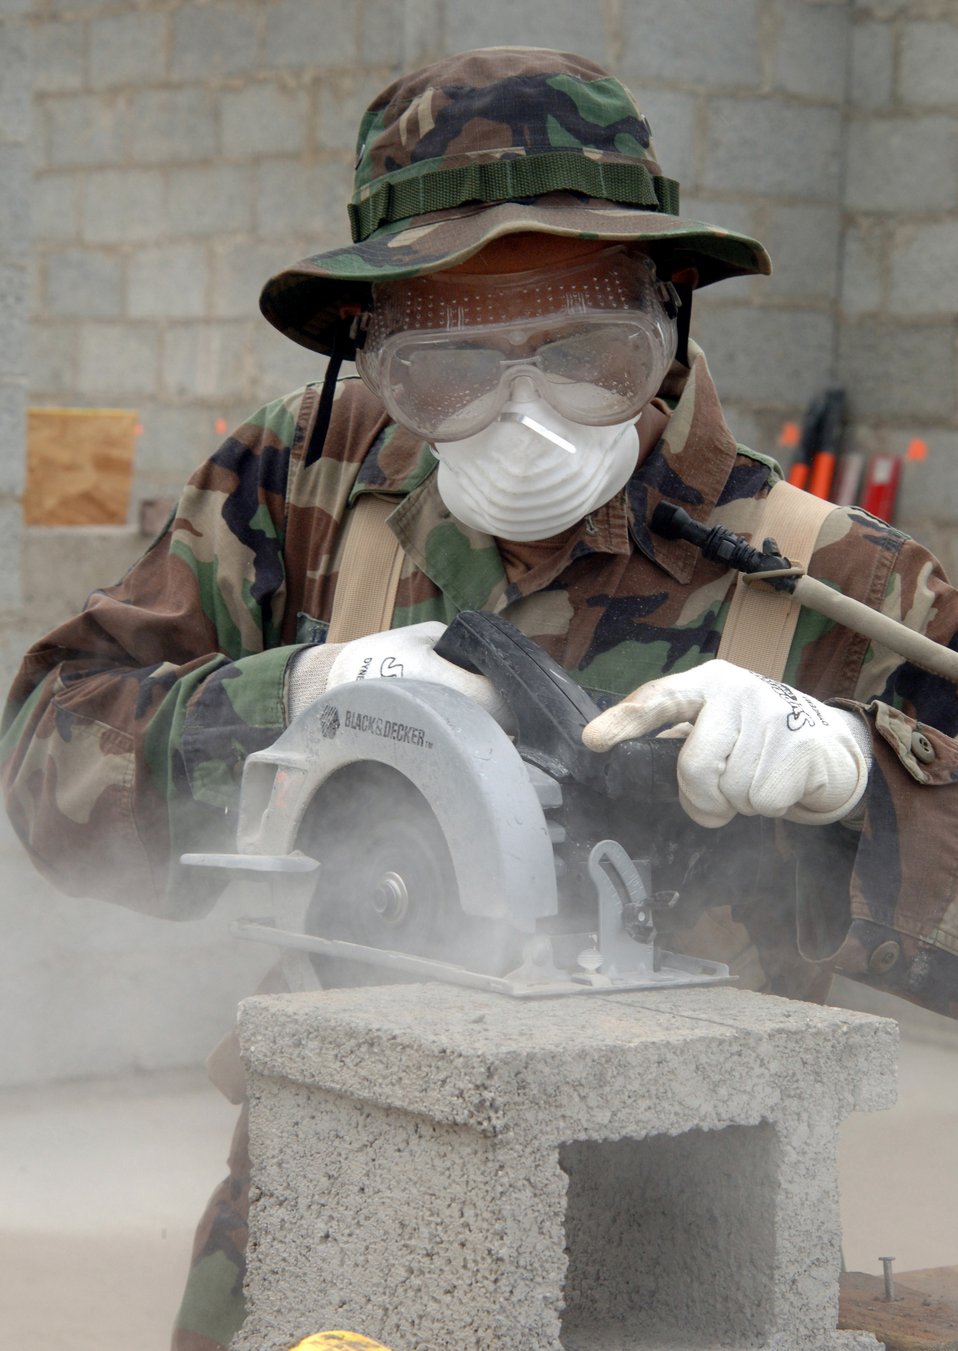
Reserve engineers in Saint Lucia

Senior Airman Trevon Walton cuts a cinder block to size for a project on Saint Lucia's southern coast on Saturday, April 8, 2006. The project includes building an operations center and barracks for the police force in support of St. Lucia's counter-drug operations. Airmen Walton is with the 433rd Civil Engineer Squadron at Lackland Air Force Base, Texas.